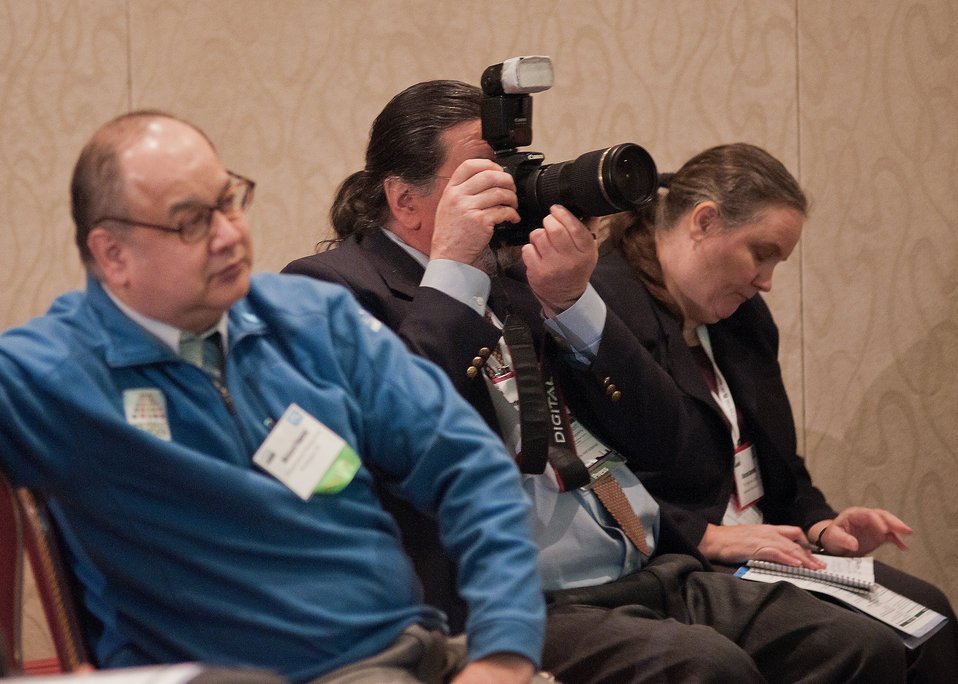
Attendees listen and photograph speakers at the Education and Cooperation Track breakout session - Innovative Solutions for Meeting the Challenges of Small and Disadvantaged Farmers at the 2012 Agricultural Outlook Forum, “Moving Agriculture Forward, Growing, Innovating and Celebrating 150 Years” held at the Crystal gateway Marriott Hotel Arlington, Virginia, Friday, February 24, 2012. This year’s forum coincides with the 150th anniversary of the Department of Agriculture.